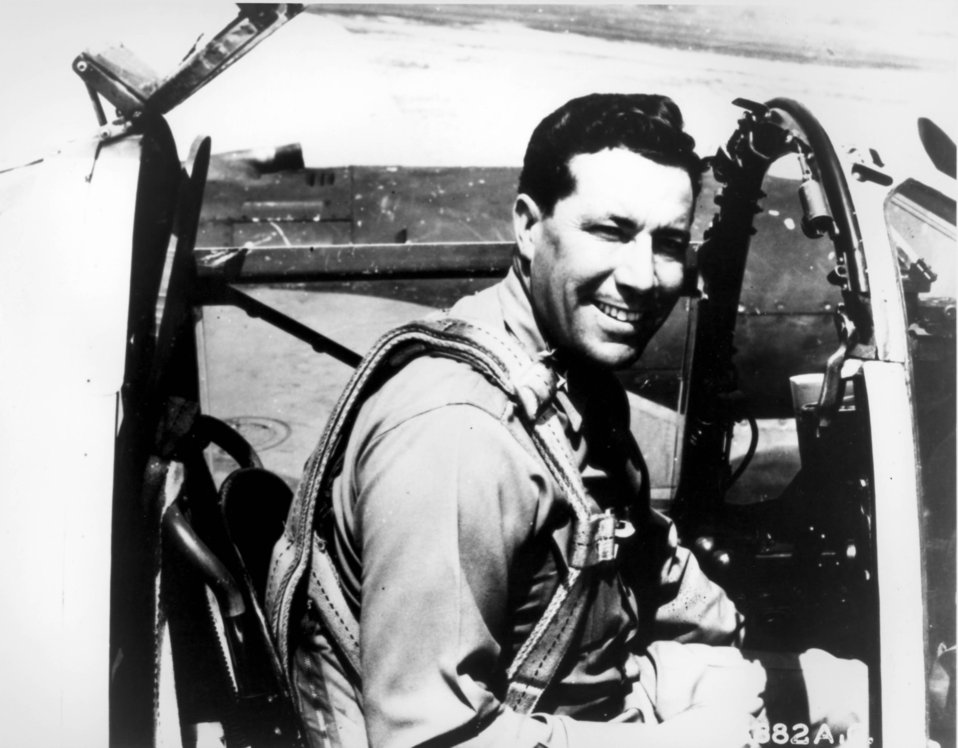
Elwood R. Quesada

1940's -- Captain Elwood R. Quesada, assigned to intelligence in the Office of the Chief of Air Corps in October 1940, went on to become commanding general of the 9th Fighter Command where he established advanced Headquarters on the Normandy beachhead on D-Day plus one, and directed his planes in aerial cover and air support for the Allied invasion of the continent.